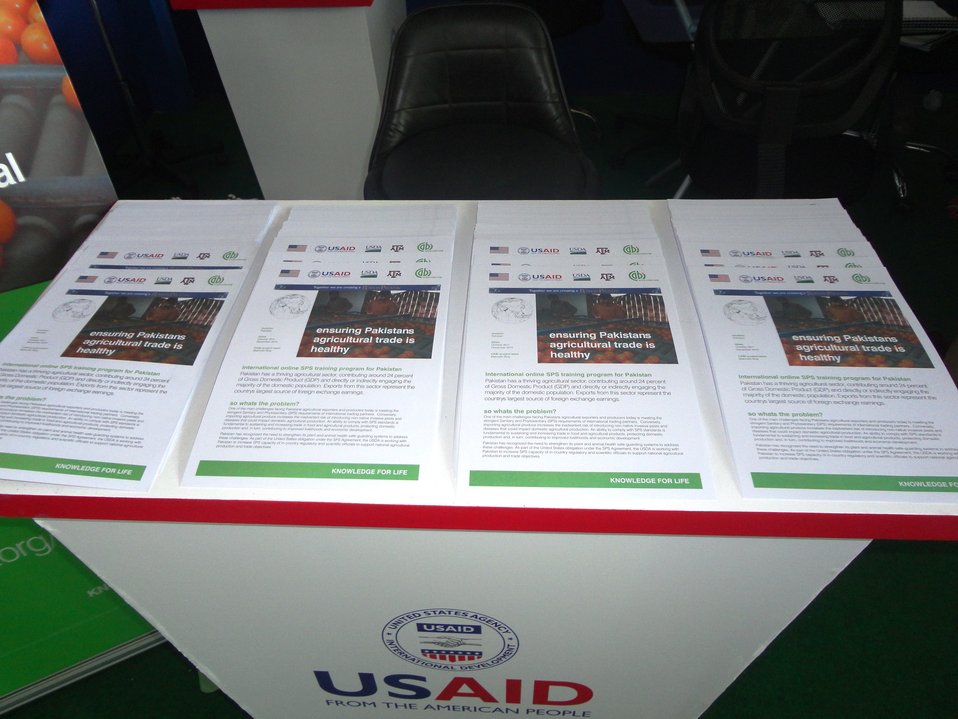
USDA SPS Project at the DAWN Sarsabaz Agri Expo

USDA SPS Project Stall at the Dawn Agri Expo.